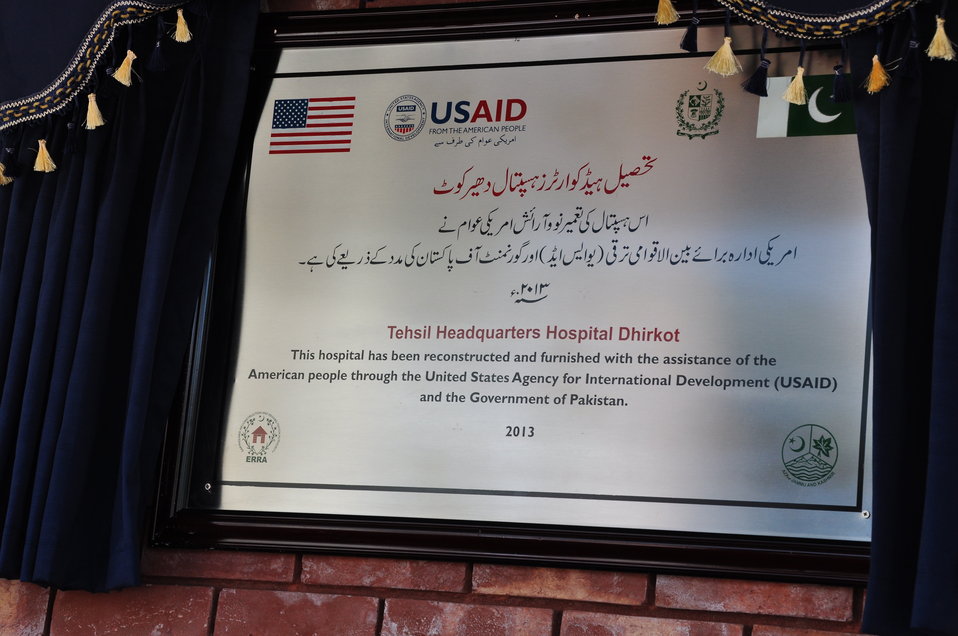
Dhirkot Reconstructed Hospital Inauguration Pakistan Reconstruction Program 04